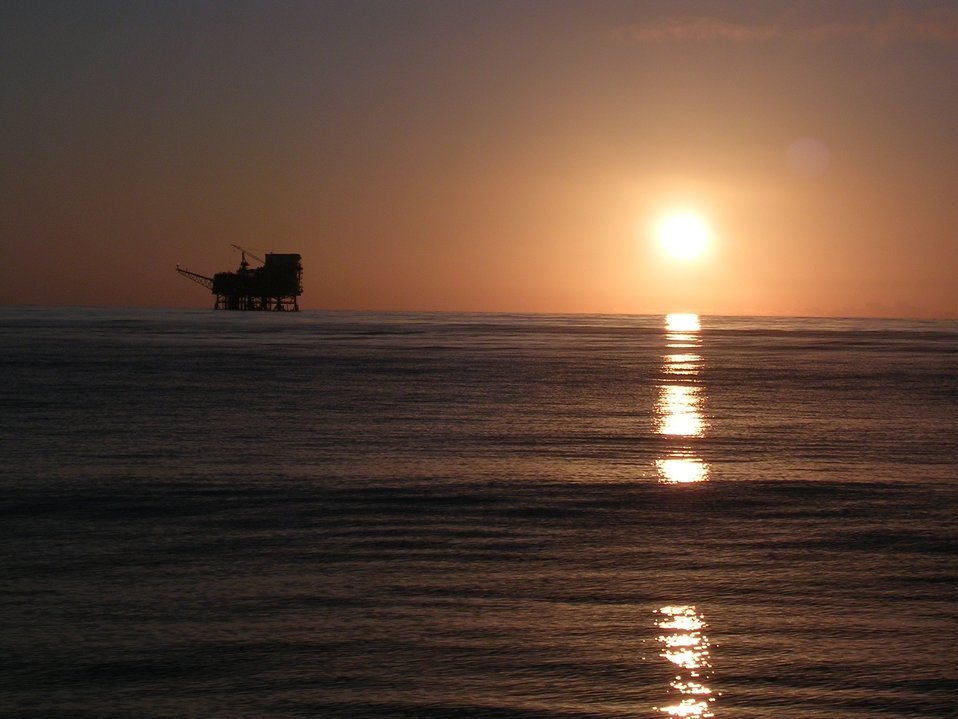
Sunset with an oil rig off Southern California as viewed from the contract fishery research vessel AGRESSOR.